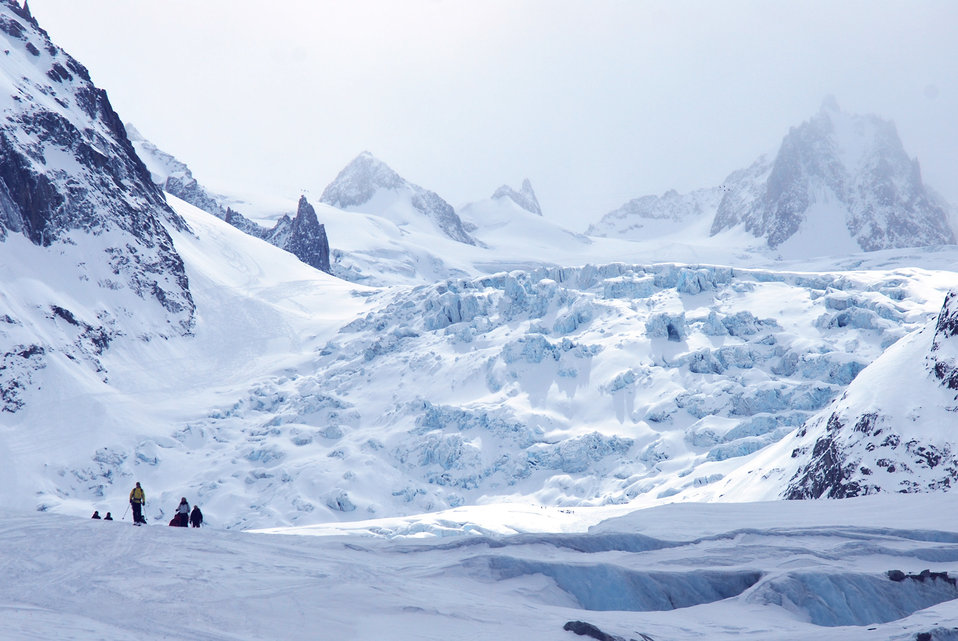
Alpine pararescuemen train for mountain rescues

Pararescuemen ski below Mont Blanc de Cheilon, which reaches the height of 12,697 feet, while following the Haute Route, which took them from Chamonix, France to Zermatt, Switzerland April 5, 2010. The journey took six days, and each night the PJs stopped at a different cabin along the route. They were practicing their mountain rescue techniques while following the route. The pararescuemen are assigned to the 56th Rescue Squadron at RAF Lakenheath, England.